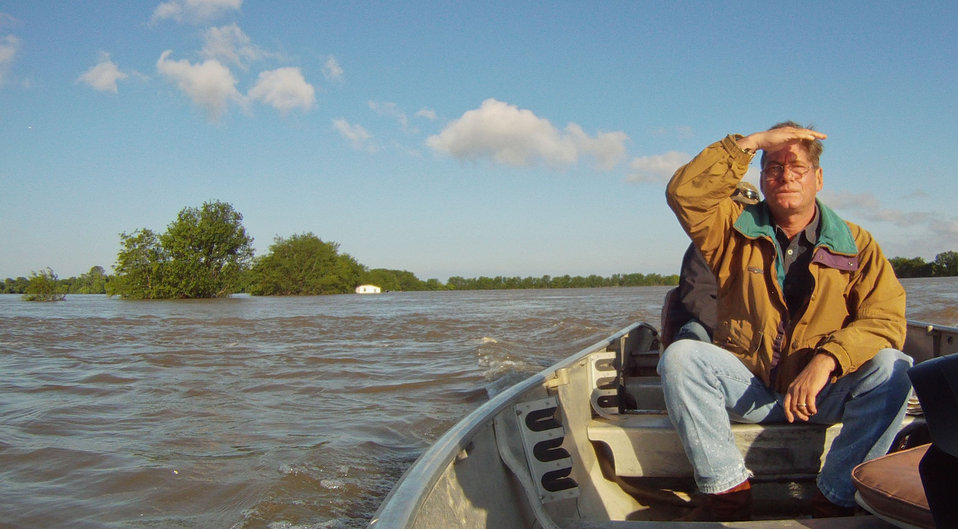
Joe Higdon looks for his cattle fence after he found his house (in background) pushed against the tree line of his property on President's Island that was flooded with 6-12 feet of the Mississippi River near Memphis, TN, on Sunday, May 15. 2011. He is near the former location of his house.